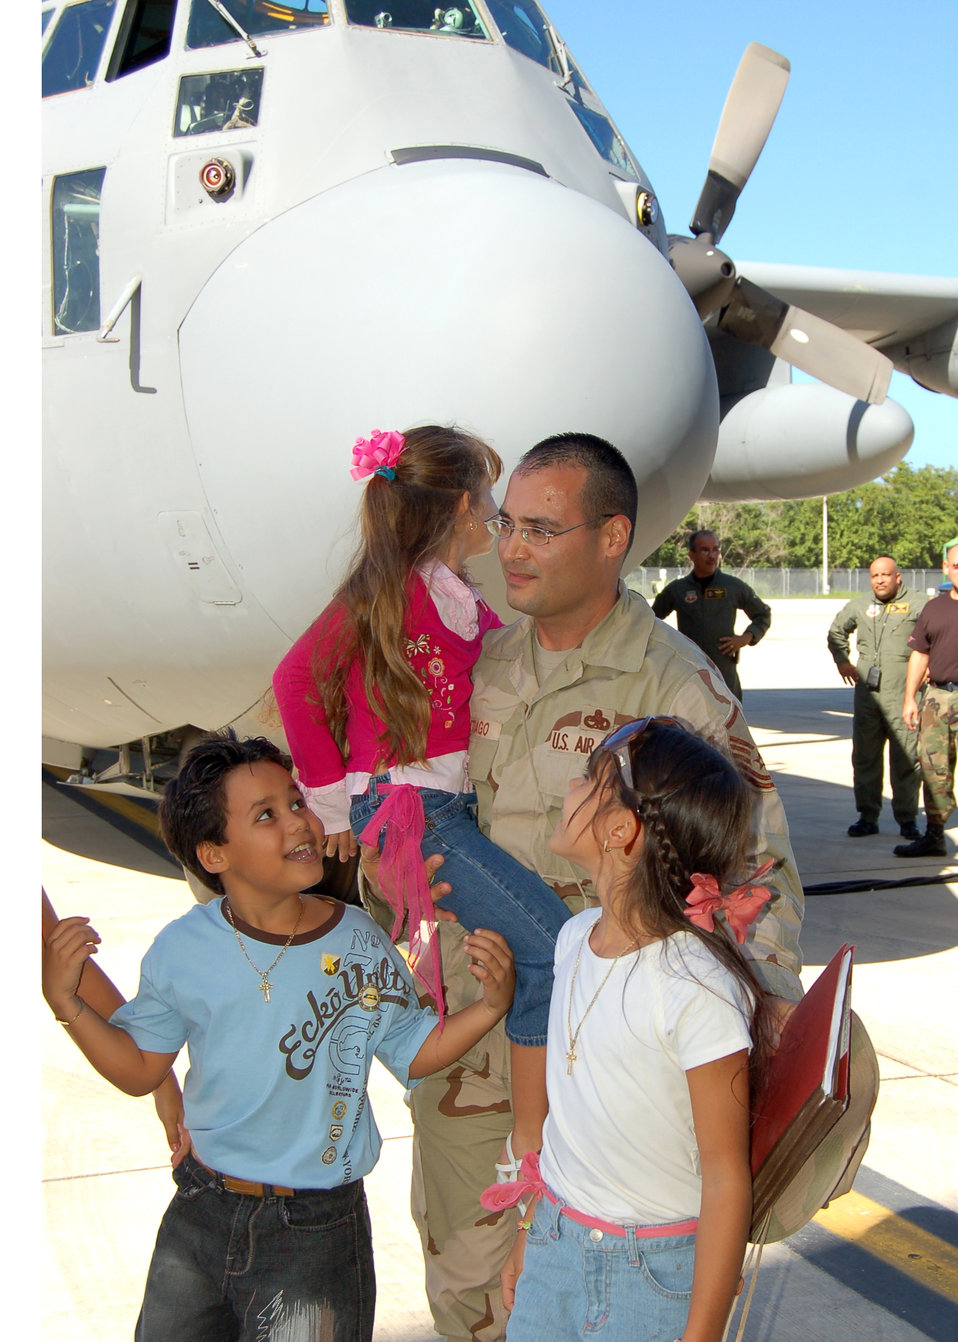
Buccaneers Return Home

Master Sgt. Ramon Santiago holds his daughter, Camila, as two of his other children, Ramon and Arianna, welcome him home at Mu√±iz Air National Guard Base, Puerto Rico, Dec. 16. The 156th Aircraft Maintenance Squadron jet engine mechanic was deployed to Bagram Air Base, Afghanistan. The unit is part of the 156th Airlift Wing of the Puerto Rico Air National Guard.